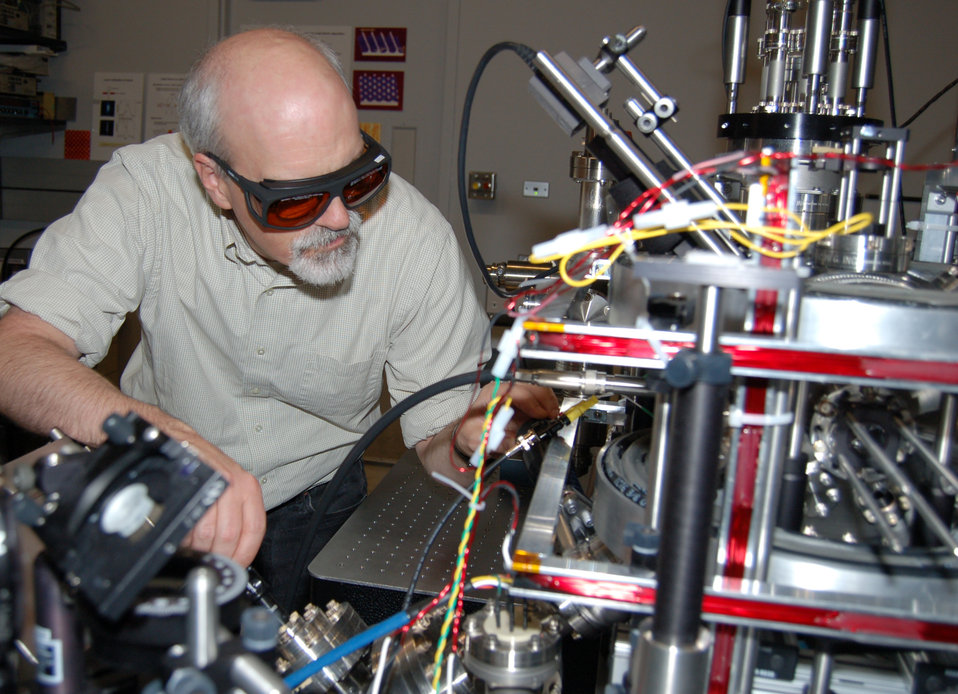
Cold Atoms; Hot Gallium; Focused Ion Beams

NIST researcher Jabez McClelland makes adjustments on the new magneto-optical trap ion source, capable of focusing beams of ions down to nanometer spots for use as a 'nano-scalpel' in advanced electronics processing.